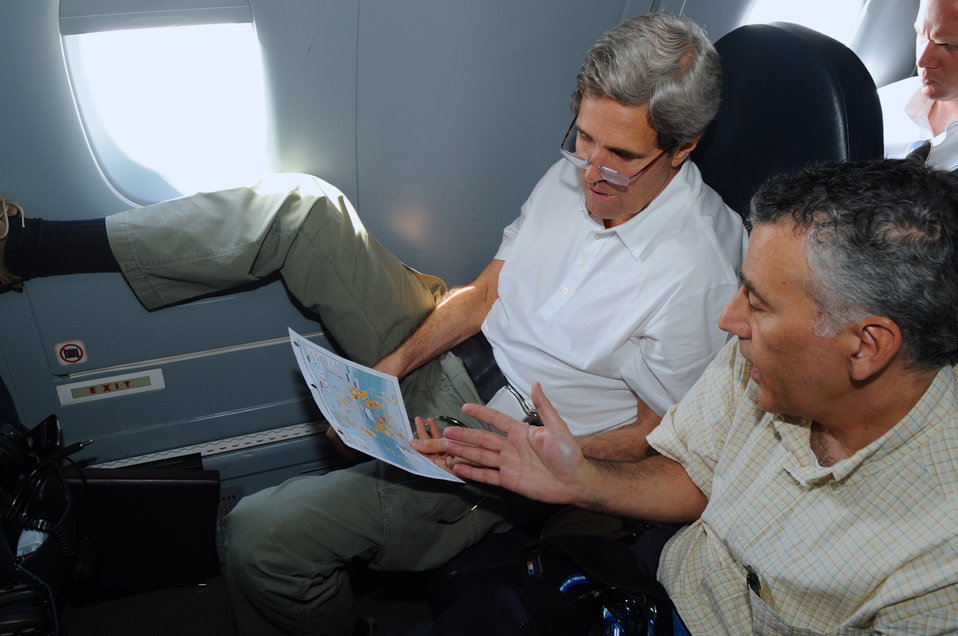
Secretary Kerry, Ambassador Goldberg Review a Map of Typhoon Haiyan's Path

U.S. Secretary of State John Kerry and U.S. Ambassador to the Philippines Philip Goldberg review a map showing the path of Typhoon Haiyan as they fly from Manila to Tacloban City, Philippines, to announce $25 million in fresh U.S. recovery aid on December 18, 2013.